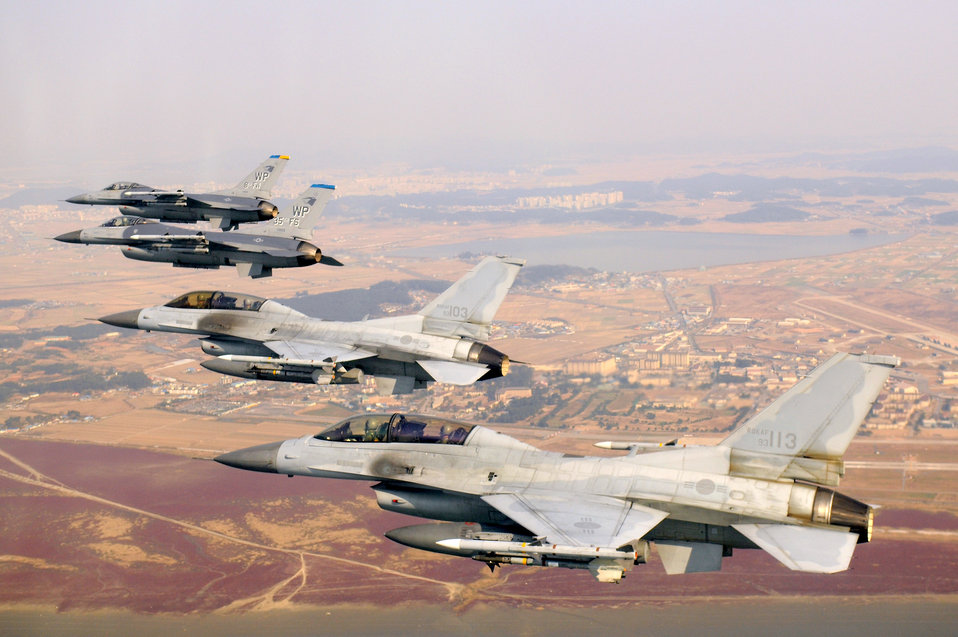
Korean War anniversary

A formation of F-16 Fighting Falcons flies during a U.S. and South Korean air force coalition flight Nov. 10, 2010, over Kunsan Air Base, South Korea. The flight was in celebration of the 60th anniversary of the Korean War.